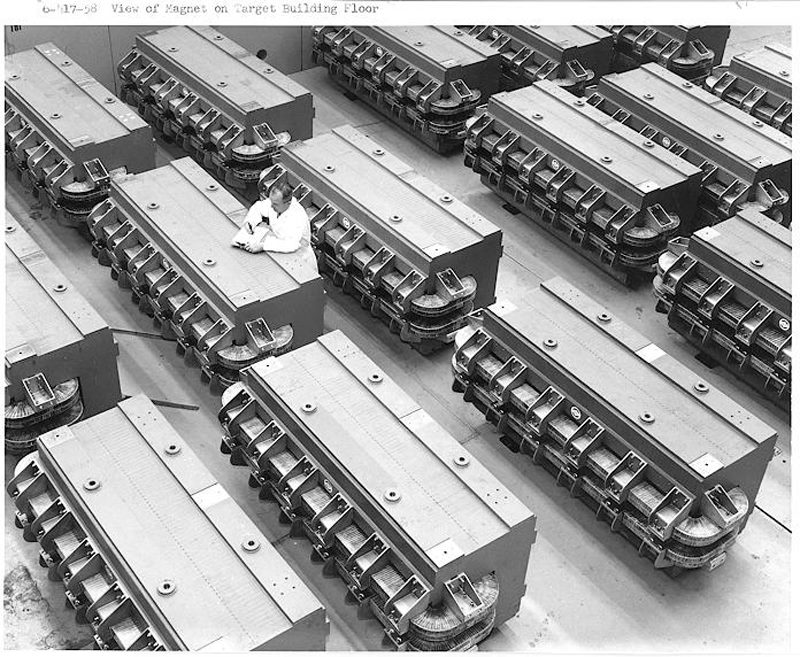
Photo of the Week: The Alternating Gradient Synchrotron

Since 1960, the Alternating Gradient Synchrotron (AGS) has been one of the world's premiere particle accelerators, well known for the three Nobel Prizes won as a result of research performed there. The AGS name is derived from the concept of alternating gradient focusing, in which the field gradients of the accelerator's 240 magnets are successively alternated inward and outward, permitting particles to be propelled and focused in both the horizontal and vertical plane at the same time. In this 1958 photo, giant magnets await installation into the AGS accelerator ring tunnel at Brookhaven National Laboratory.